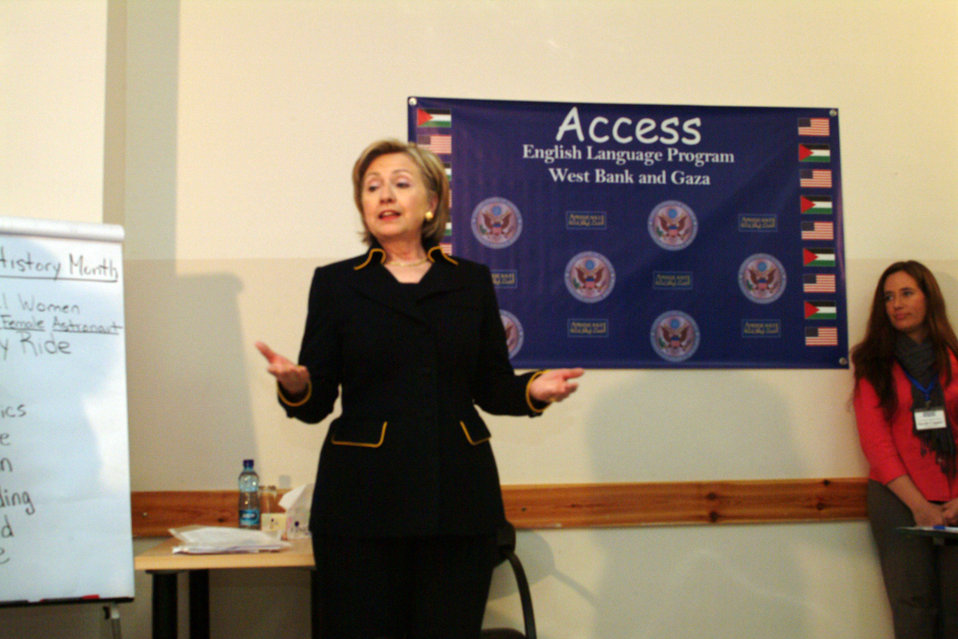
Secretary Clinton Attends Amideast Event

U.S. Secretary of State Hillary Rodham Clinton attends an Amideast event in Ramallah March 4, 2009.